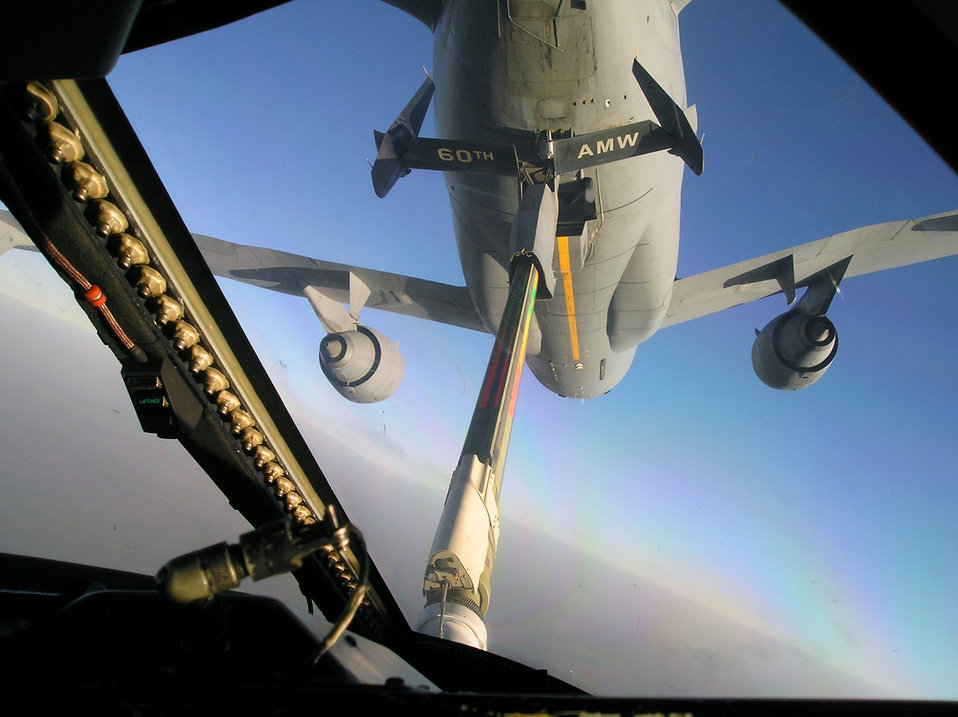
Fuel efficiency

A KC-10 Extender from the 908th Expeditionary Air Refueling Squadron refuels an aircraft Feb. 1, 2010, over Afghanistan, during Operation Enduring Freedom air refueling operations. Air Mobility Command aircraft like the KC-10 are involved in several initiatives by AMC Fuel Efficiency Office officials to save fuel for the command and the Air Force.